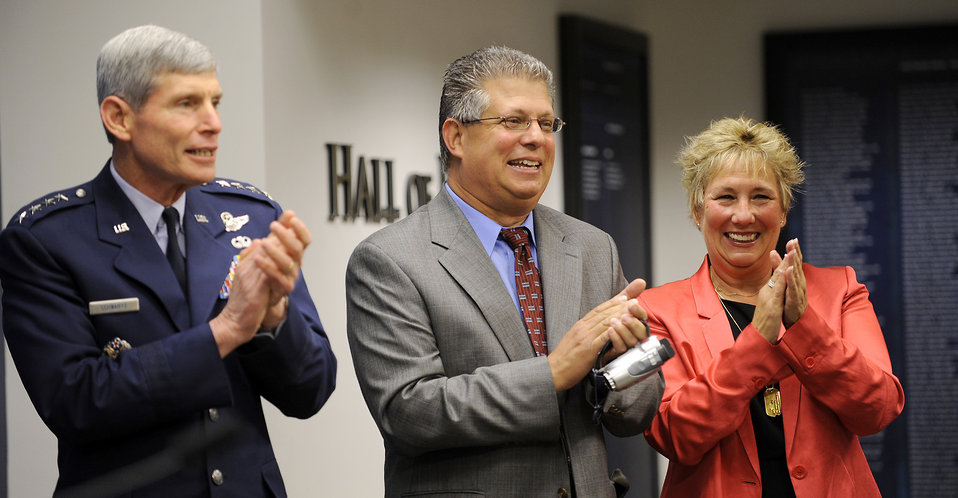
Former U-2 pilot posthumously awarded Silver Star

Air Force Chief of Staff Gen. Norton Schwartz celebrates with Gary Powers Jr. and Dee Powers, children of Capt. Francis Gary Powers, after Schwartz presented the captain’s posthumous Silver Star to the family on June 15, 2012, in the Pentagon. Captain Powers was shot down over the Soviet Union on May 1, 1960, and received the decoration for the heroism he displayed while held prisoner by the Soviets. He was released in 1962 but subsequently died in a 1977 helicopter crash.